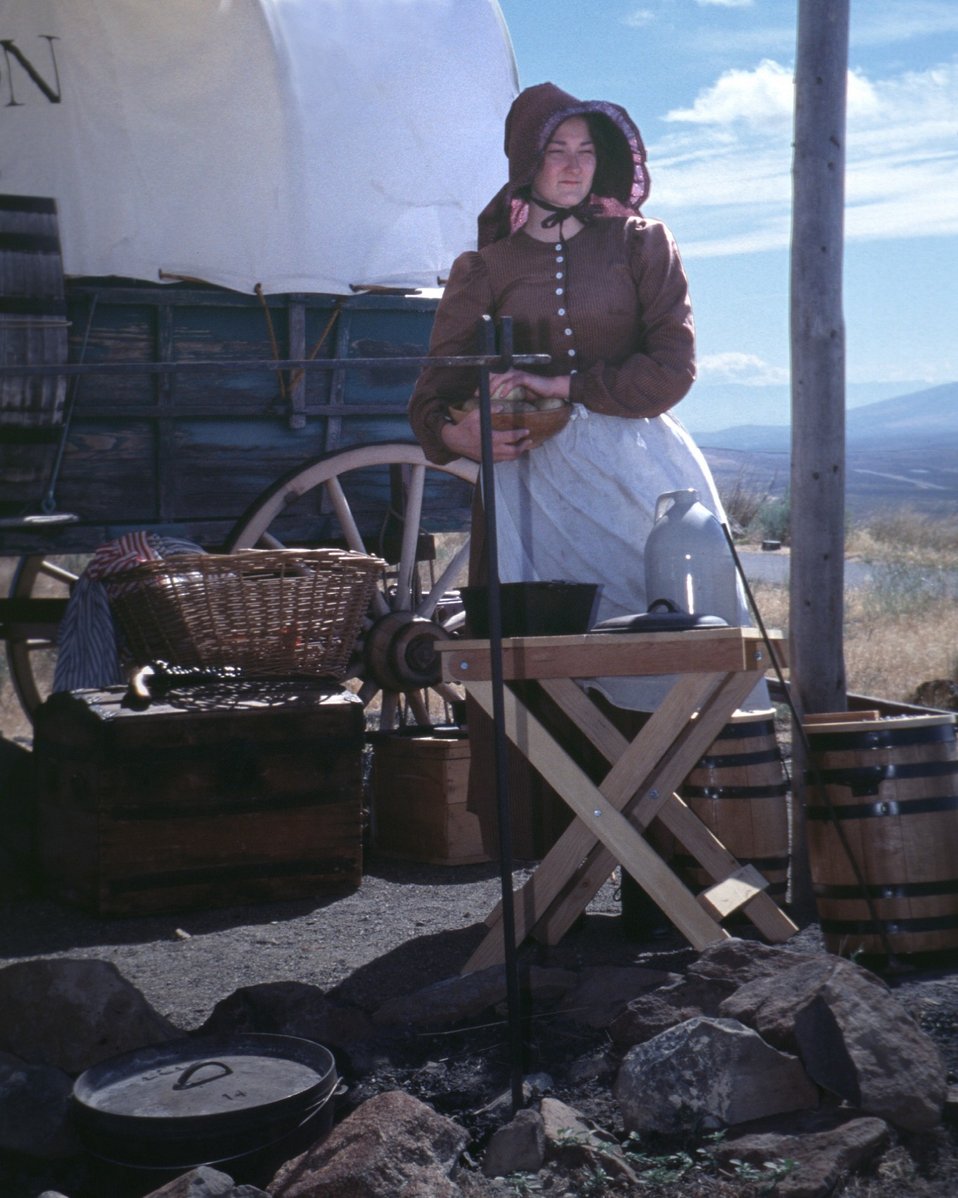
Rebecca Crow portrays a pioneer woman cooking on the Oregon Trail.